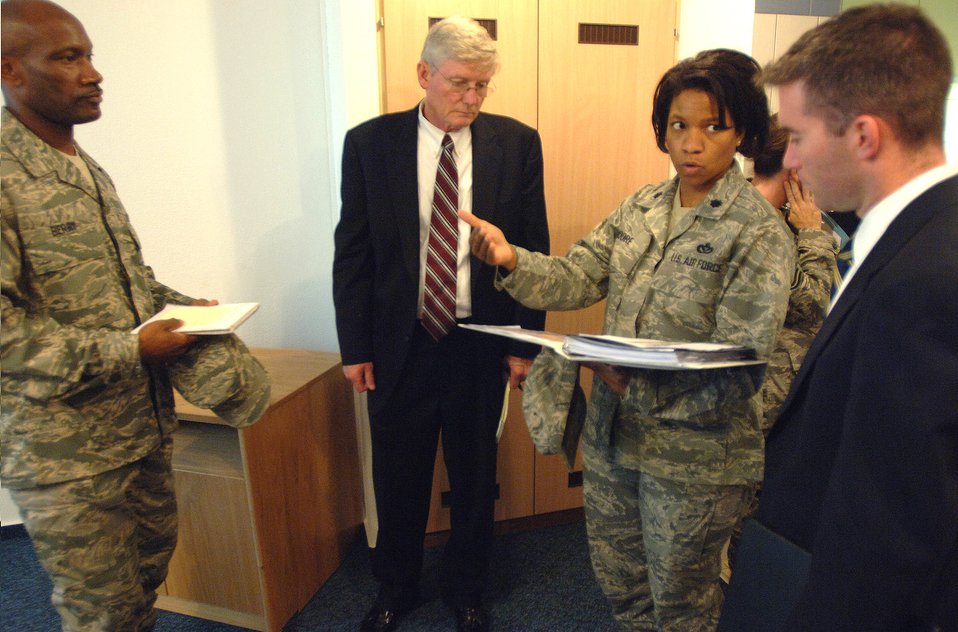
Congressional team evaluates Airmen's living quarters

Lt. Col. Bobbie Moore describes how maintenance repairs impact Airmen living in unaccompanied dorms with Keith Baker (center) and Adam Johnson while Master Sgt. Bradford Berry looks on Oct. 16 in Kaiserslautern, Germany. The discussion was part of a Department of Defense-wide investigation that canvassed nearly 60 installations worldwide. Colonel Moore is the 435th Civil Engineer Squadron commander. Mr. Baker and Mr. Johnson are House Appropriations Committee staff delegates. Sergeant Berry is the unaccompanied housing superintendent.